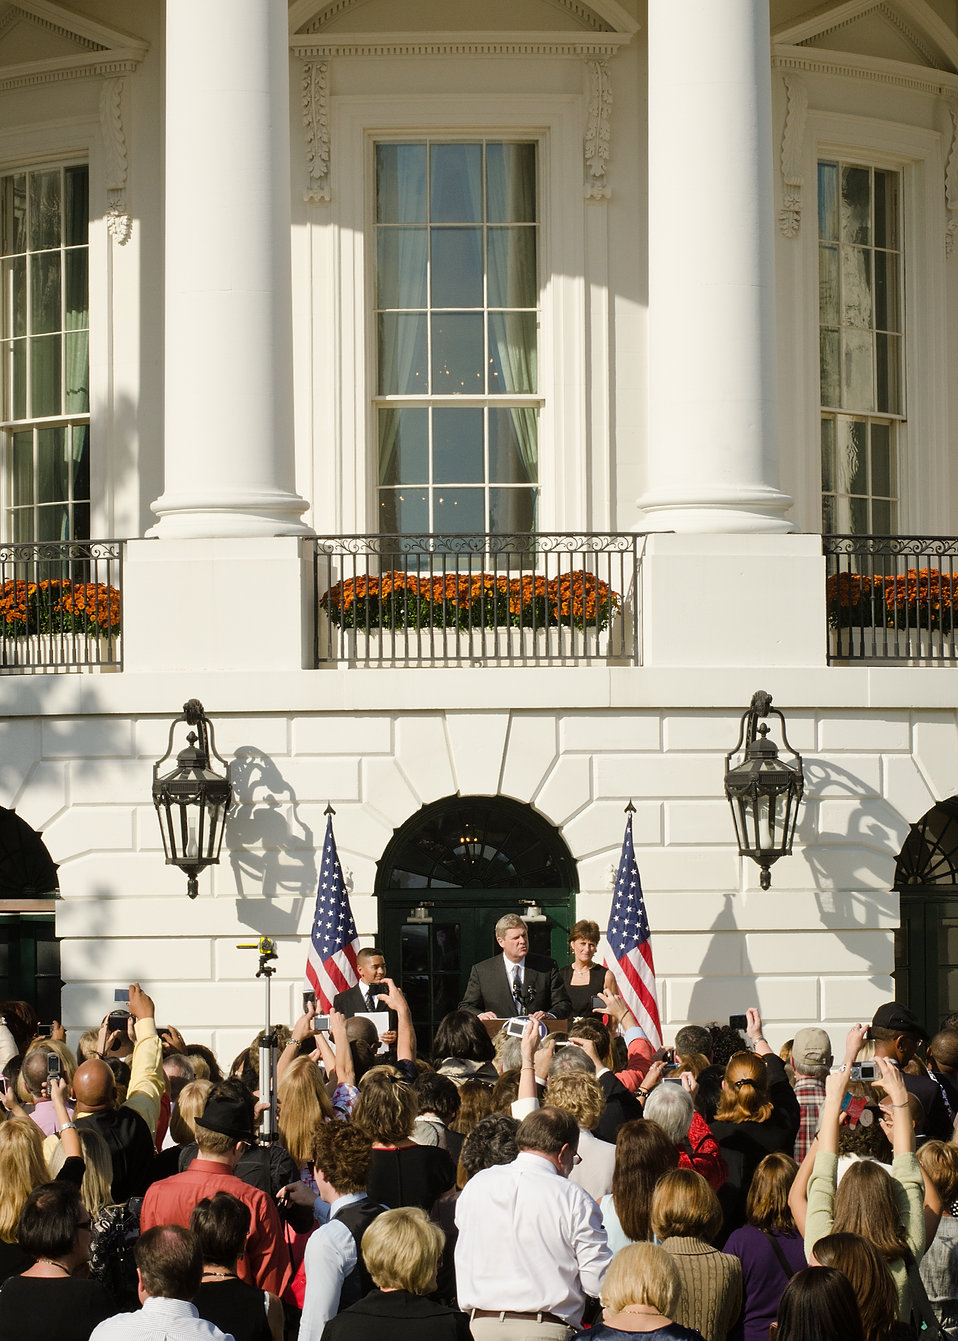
Agriculture Secretary Tom Vilsack explains the benefits of the HealthierUS Schools Challenge prior to First Lady Michelle Obama’s speech at a reception on the South Lawn of the White House in Washington, DC, on Monday, October 17, 2011 to honor the winners of the HealthierUS Schools Challenge. Behind Secretary Vilsack from left are Alex Roman, Walsh Elementary School, Chicago, Illinois and Becky Bounds, Lamar County Schools, Mississippi. Secretary Vilsack and the First Lady hosted the reception to honor the over 1200 winners in the HealthierUS Schools Challenge that met the First Lady’s goal to double the number of participants in the HealthierUS School Challenge in a year. In February 2010, First Lady Michelle Obama introduced “Let’s Move” incorporating the HealthierUS School Challenge into her campaign to promote a healthier generation of children. The HealthierUS School Challenge recognizes elementary, middle and high schools nationwide that create healthier school environments by providing exceptional nutrition education, nutritious food and beverage choices, physical education and opportunities for physical activity. Since the beginning of the HealthierUS School Challenge in 2004, awards have been given to schools in 44 states. As of September 28, 2011, there are 1631 schools certified. A tool kit on how to become a Healthier U.S. School can be found at www.fns.usda.gov.